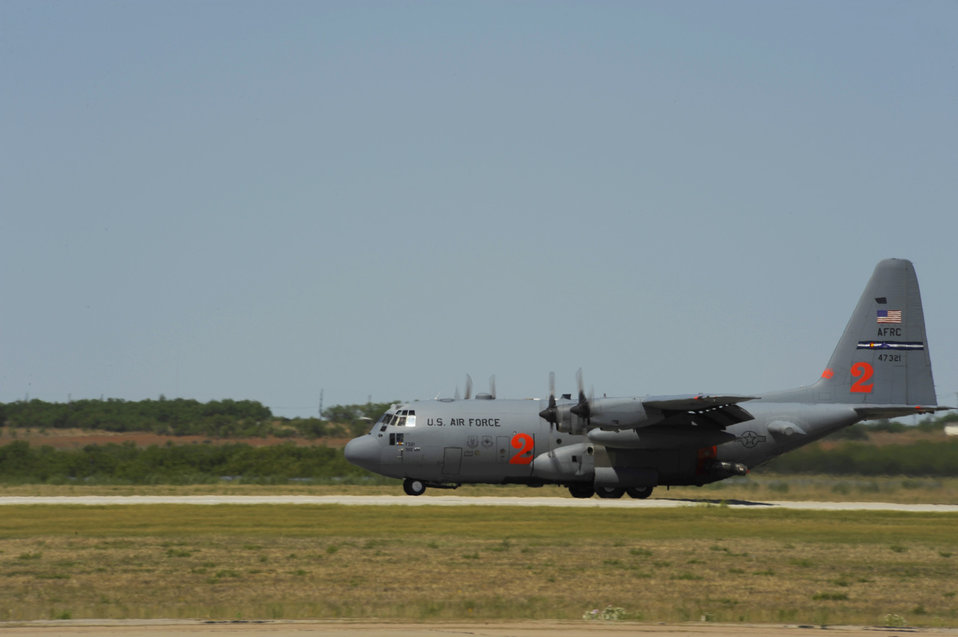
Texas Wildfires

A C-130 Hercules lands April 28, 2011, at Dyess Air Force Base, Texas.